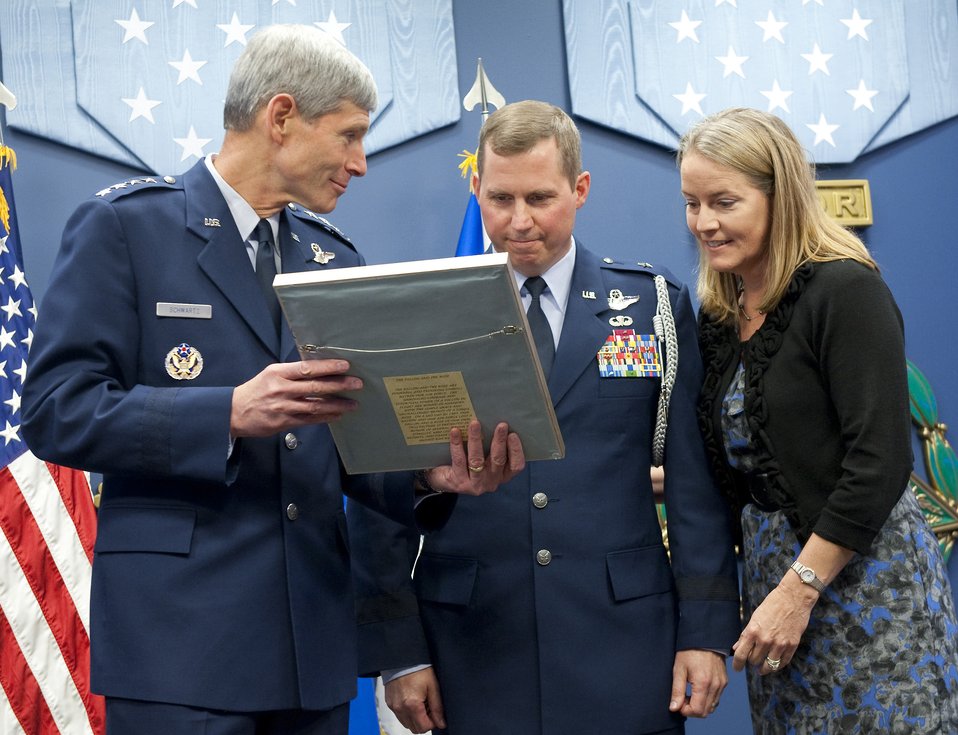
O'Malley Award

Air Force Chief of Staff Gen. Norton Schwartz (left) presents the 2010 General and Mrs. Jerome F. O'Malley award to Brig. Gen. Thomas W. Bergeson and his wife Pamela during a ceremony in the Pentagon Oct. 4, 2010. The award is presented annually to the wing commander and spouse team who have best exhibited their own courage, power, grace and beauty in caring for Air Force families. The award was established after the O'Malleys, who were known for their leadership and contributions to Air Force families and communities, were tragically killed in a plane crash in 1985.